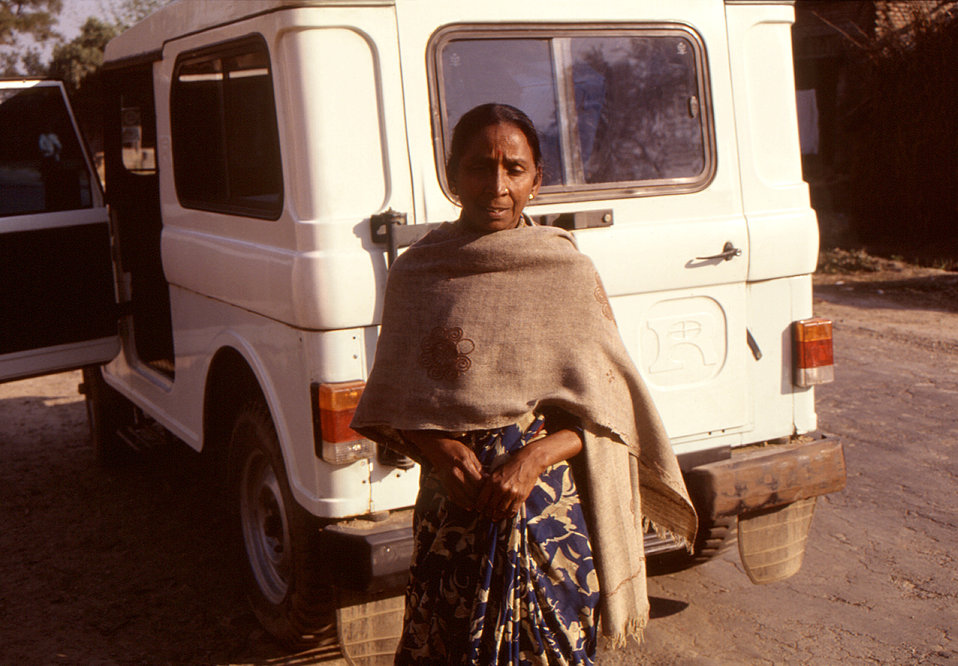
Preparing to investigate a suspected case of polio in a rural area of India, this 2000 photograph depicted an on-duty health care worker standing behind her van. Provided by Chris Zahniser, B.S.N., R.N., M.P.H., a STOP Transmission of Polio (STOP) immunization initiative team member and photographer. Ms. Zahniser was at the time assigned to the state of Uttar Pradesh in northern India, and spent three months working in the Districts of Gorakhpur and Deoria.